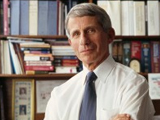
Anthony Fauci 160x120